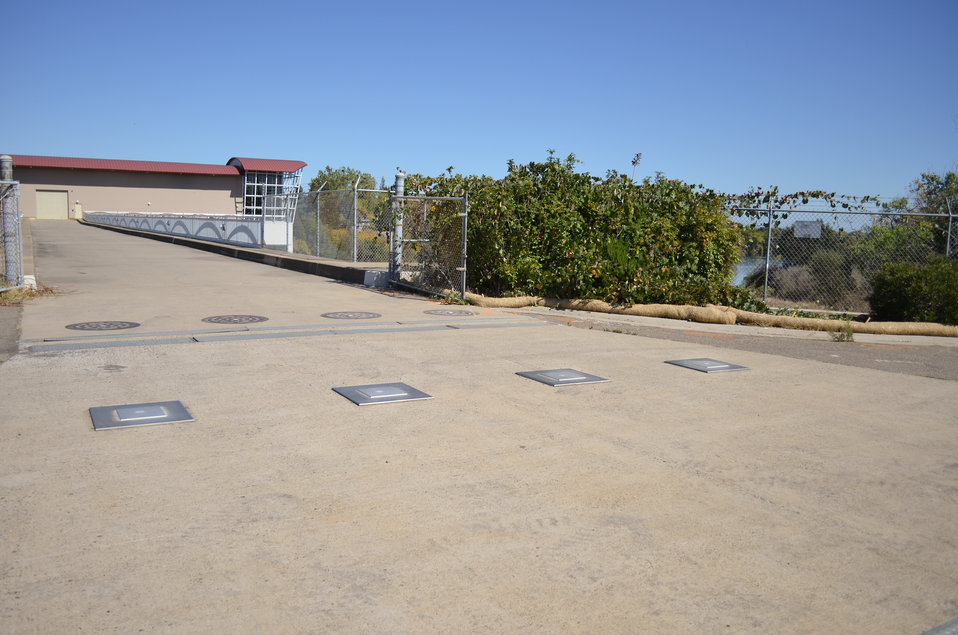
Square steel plates mark where crews will soon drill

Square steel plates, shown Oct. 3, 2013, mark where U.S. Army Corps of Engineers Sacramento District crews will soon drill inside a levee along the American River near the Fairbairn Water Treatment Plant in Sacramento, Calif. The crews will install a seepage cutoff wall at the location. The Corps built more than 20 miles of seepage cutoff walls into American River levees between 2000 and 2002, but work was set aside for later where complicated encroachments existed such as utilities, power lines and bridges.